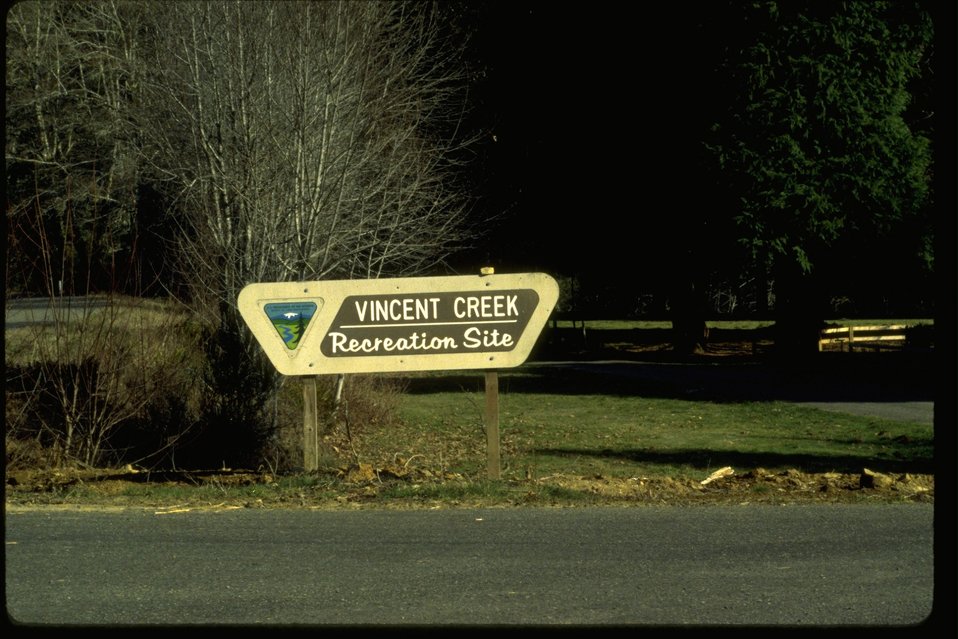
Vincent Creek Recreation Site sign.